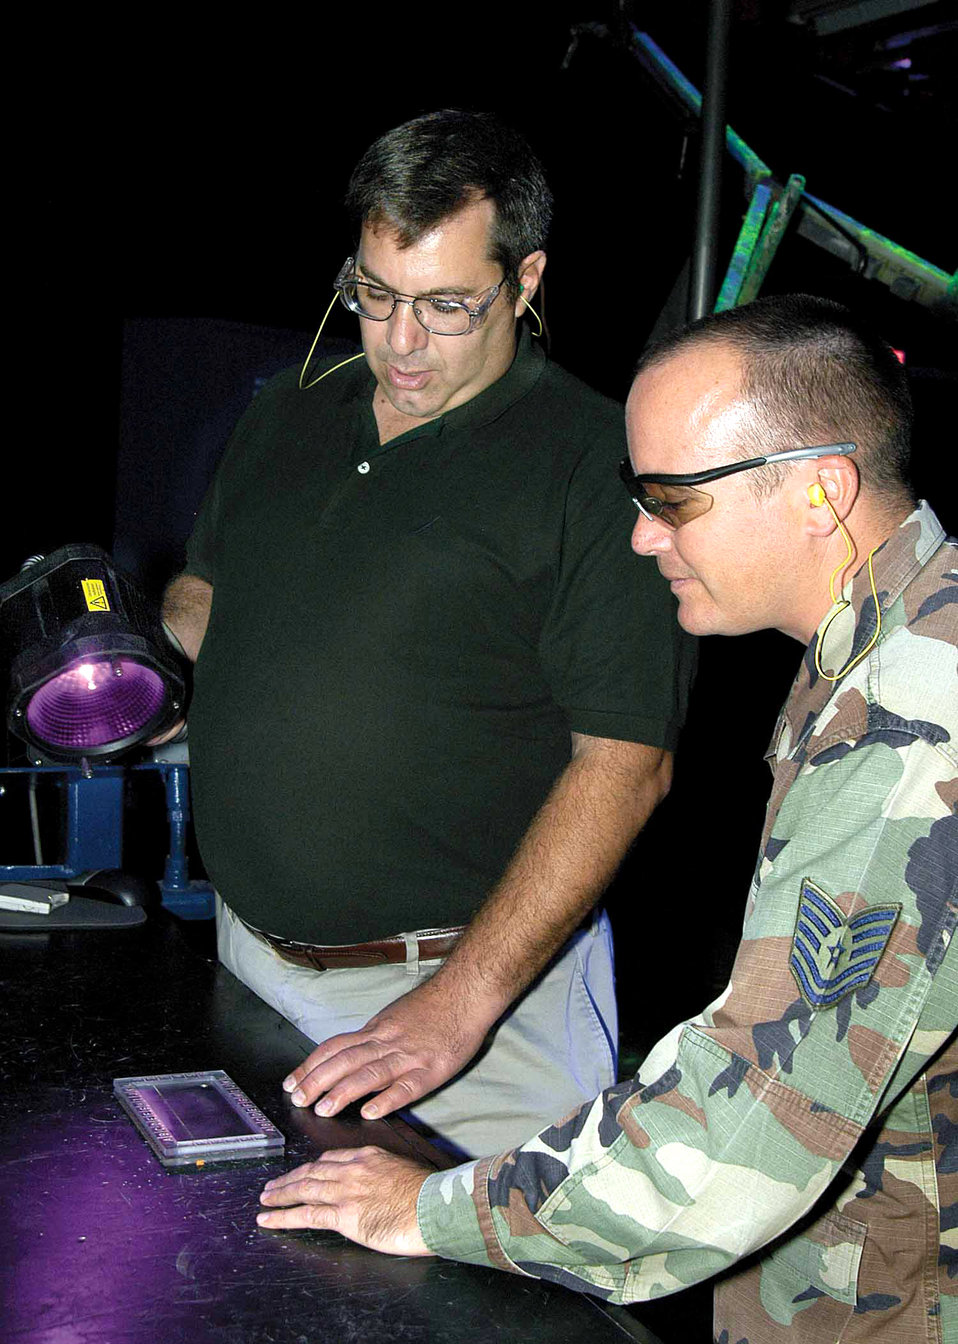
Nondestructive inspection team strives to increase reliability

Michael Makowicz discusses local training administration with Tech. Sgt. Jim Loncher in November at Tinker Air Force Base, Okla. Technicians find fine cracks in aircraft engine components using a black light for help. Mr. Makowicz is a nondestructive inspection engineer, and Sergeant Loncher is an Air Force NDI field liaison.